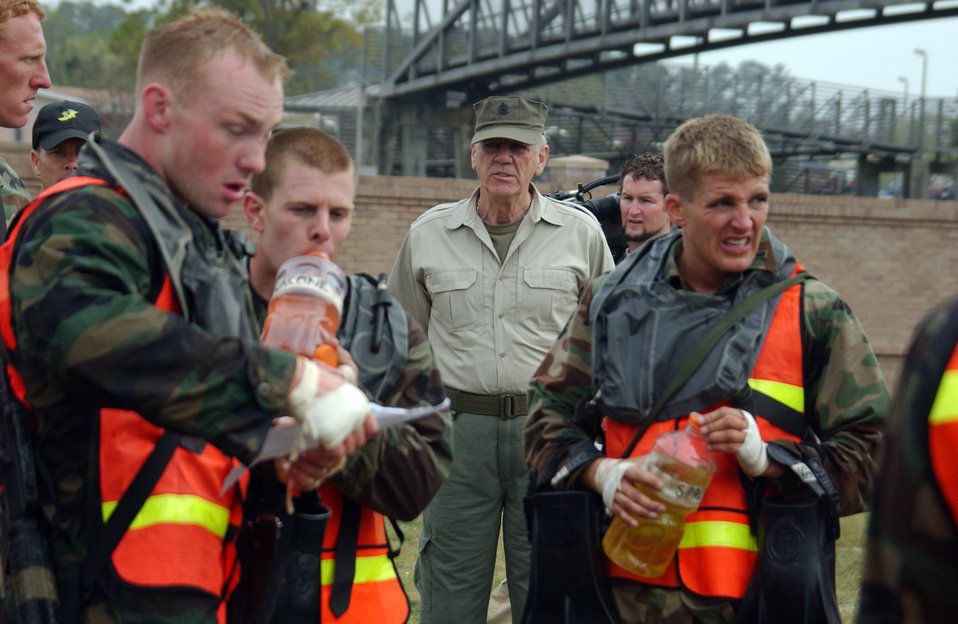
'Mail Call' host visits Hurlburt Field

R. Lee Ermey, host of the